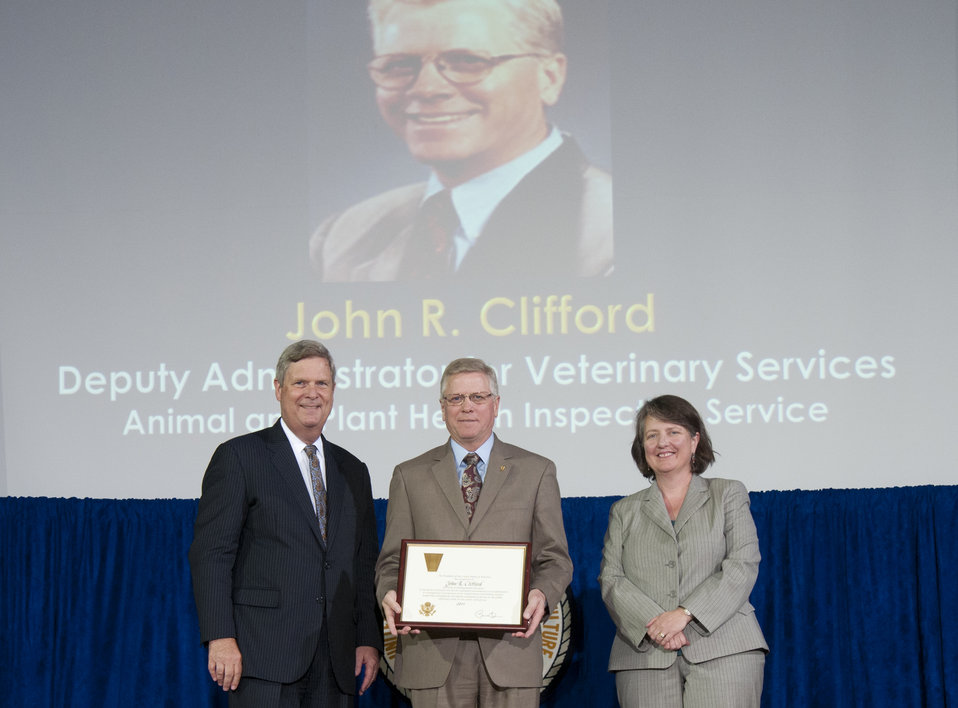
Agriculture Secretary Tom Vilsack and Agriculture Deputy Secretary Kathleen Merrigan present the Presidential Rank Award to Animal and Plant Health Inspection Service (APIS) Deputy Administrator for Veterinary Services Dr. John R. Clifford at the U.S. Department of Agriculture (USDA) 64th Annual Honor Awards Ceremony in Washington, D.C. on Wednesday, Sept. 12, 2012. Presidential Rank Award Winners in the Senior Executive Service receive this award for sustained extraordinary accomplishment in management of programs of the U.S. Government and for leadership exemplifying the highest standards of service to the public, reflecting credit on the career civil service.